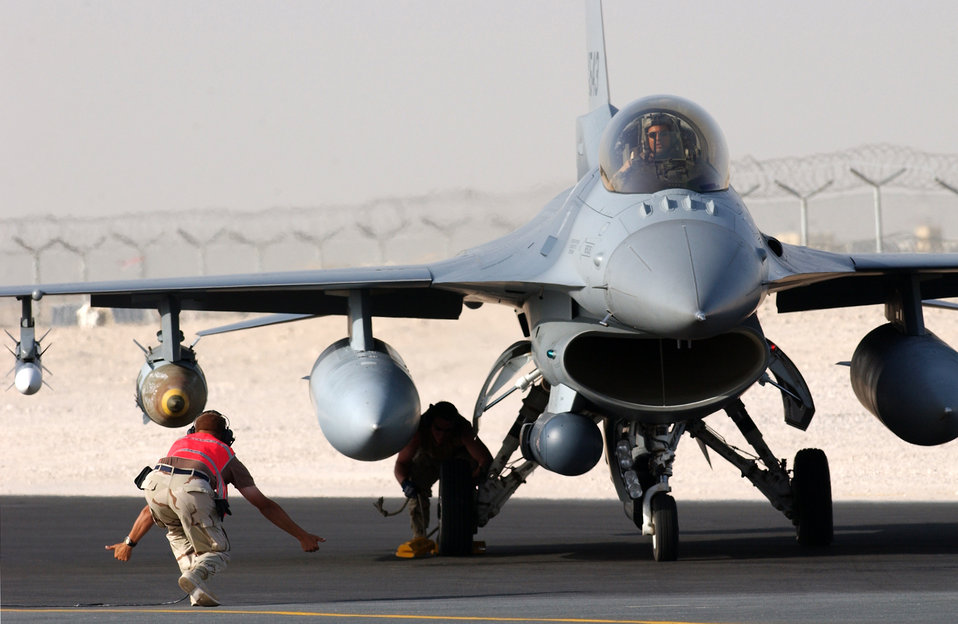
Combat sortie

OPERATION IRAQI FREEDOM -- The pilot of an F-16 Fighting Falcon assigned to the 157th Expeditionary Fighter Squadron prepares to take off on a combat sortie from a forward-deployed location in the Arabian Gulf region.